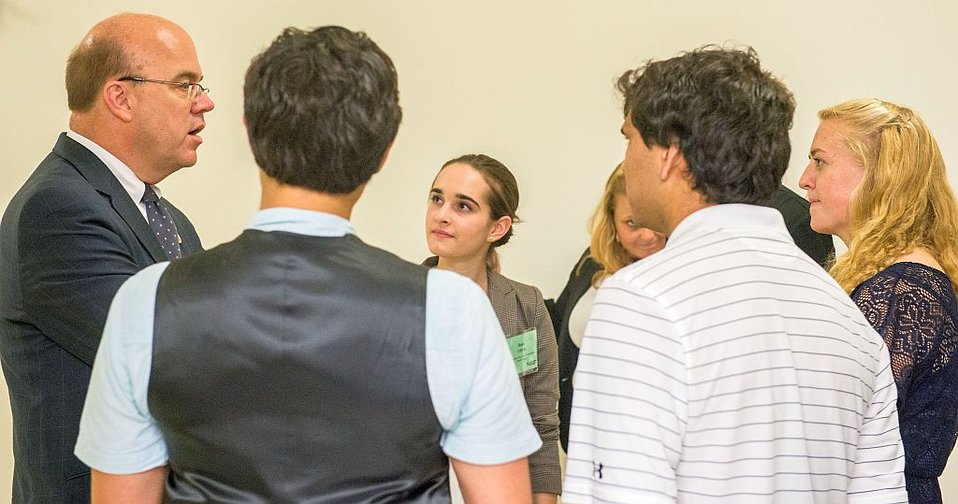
Congressman McGovern and SURF Students

Congressman Jim McGovern, Dem. Massachusetts (left) talks with Summer Undergraduate Research Fellows attending college in his district about their NIST experience.